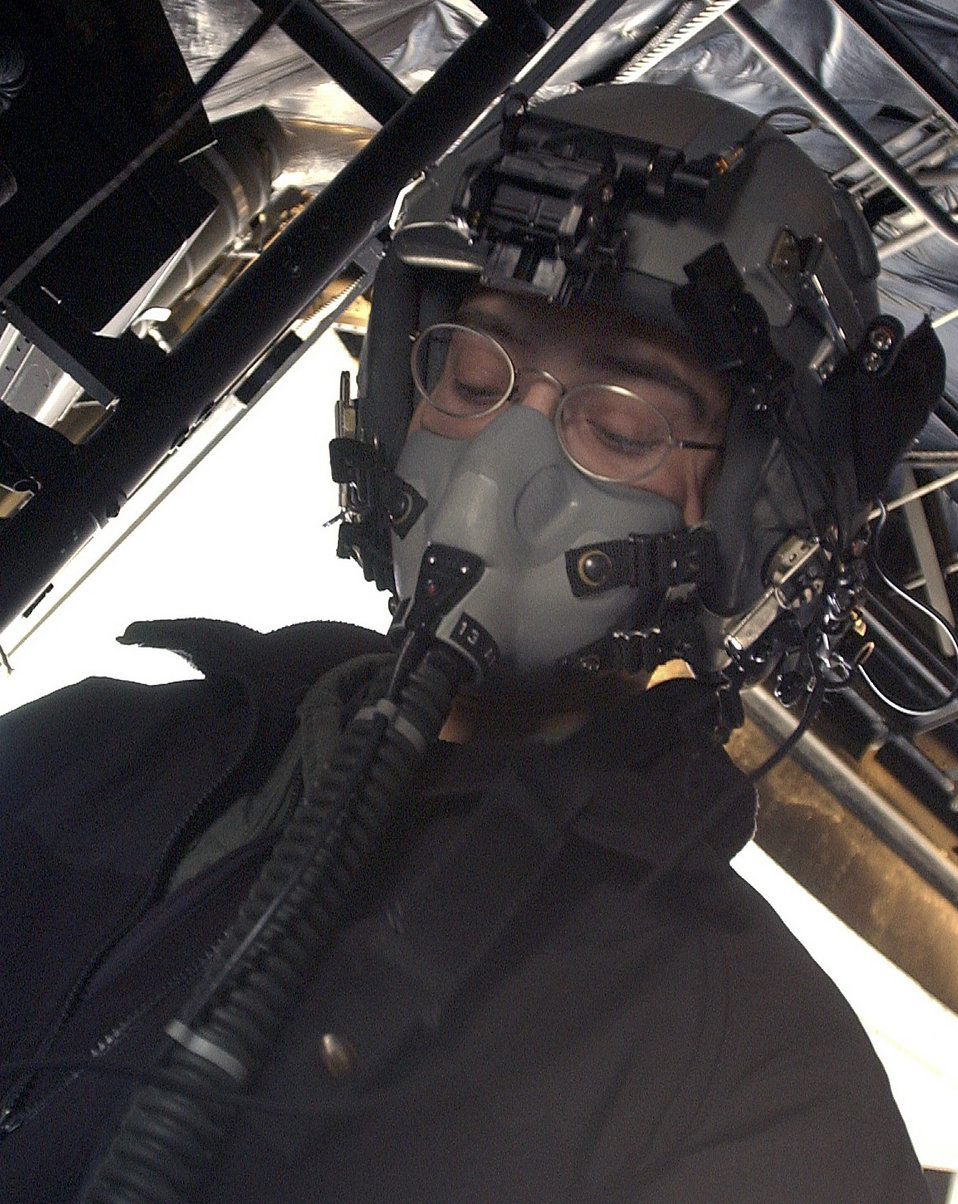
Check up

OPERATION IRAQI FREEDOM -- Senior Airman Madrid, an MC-130P Combat Shadow, from the 67th Special Operations Squadron, conducts a pressure, regulator, inspection, connection, emergency check prior to engine startup at an a forward deployed Operation Iraqi Freedom location.